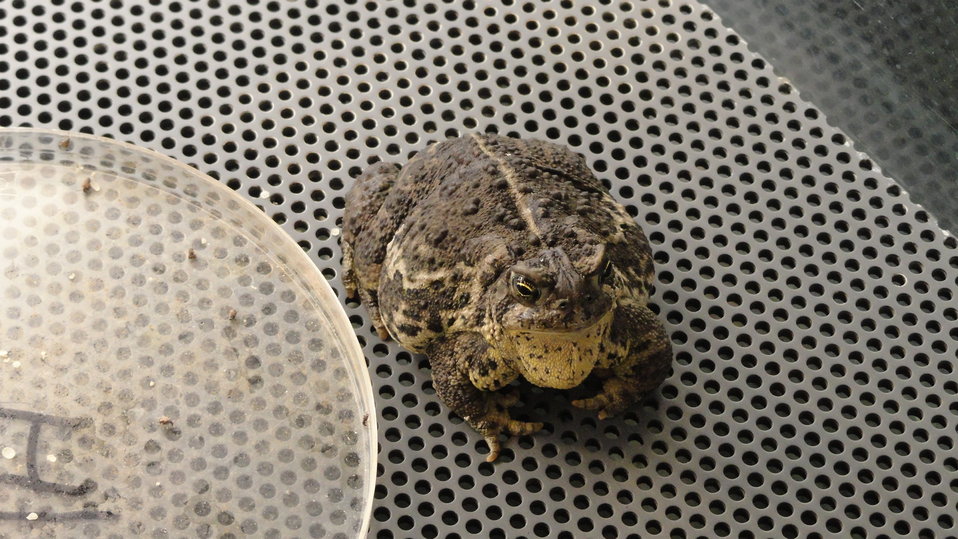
Visiting Saratoga National Fish Hatchery

In April of 2014, regional office employees visited Saratoga National Fish Hatchery to learn more about its efforts towards recovering the Wyoming toad (Bufo baxteri).

The hatchery adopted a unique role in becoming the first unit in the National Fish Hatchery System to become involved in rearing endangered amphibians. The Wyoming toad was a common sight on areas of the Laramie Plains, Albany County, Wyoming, into the early 1970s but the species' populations crashed in the mid-1970s. The Wyoming toad was listed as endangered by the U.S. Fish & Wildlife Service in January 1984. Found only in southwestern Wyoming, the Wyoming toad is considered the most endangered amphibian in North America. The hatchery maintains a captive population for breeding, rearing, and refugia, and the offspring from this program will be used for reintroduction efforts.